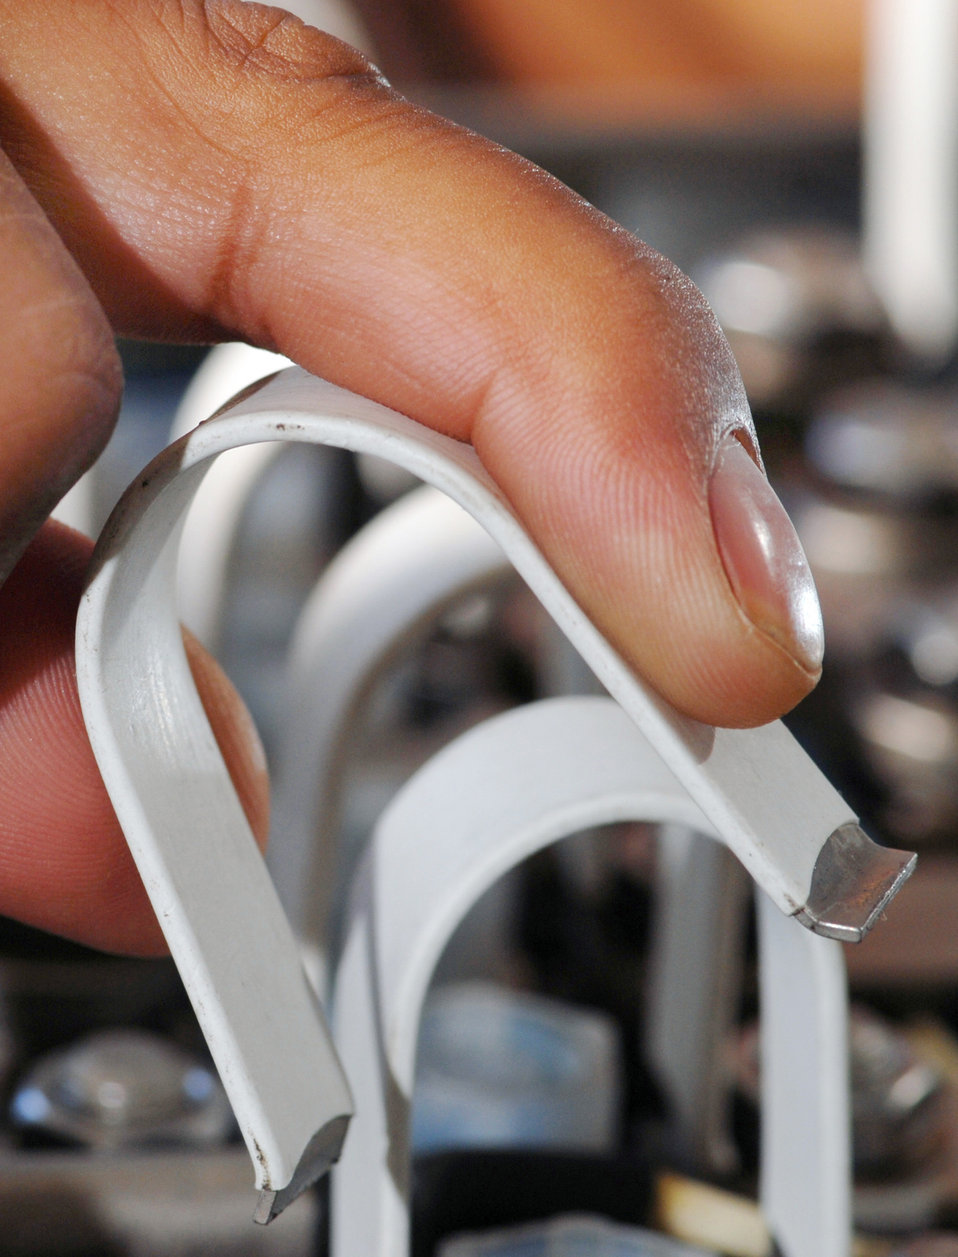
Get a charge out of work

Staff Sgt. Abraham Lagunas installs a shortening clip on a C-17 Globemaster III nickel-cadmium battery before reconditioning it Sept. 3 at March Air Reserve Base, Calif. The clips short out the battery cells to prevent electrical shock. Sergeant Lagunas is an aircraft mechanic from the 452nd Maintenance Squadron.